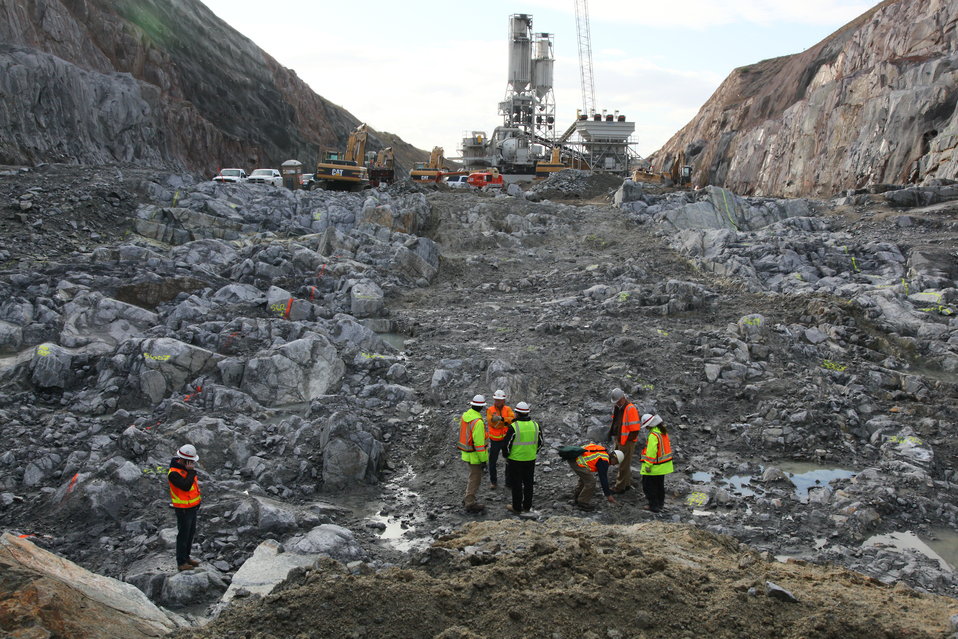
Evaluating the Folsom Dam auxiliary spillway foundation

A team of geologists from the U.S. Army Corps of Engineers Sacramento District meets with a consultant review board at the excavation site for the Folsom Dam auxiliary spillway in Folsom, Calif., Feb. 29, 2012. The board, made up of highly-qualified geology, geotechnical and structural experts, was hired to evaluate the integrity of the spillway’s foundation - a requirement for Corps’ civil works construction projects intended to reduce risk to lives to ensure they meet the highest safety standards. The spillway will allow Folsom Dam to release water sooner and more safely. The project is part of the Folsom Dam Joint Federal Project, a joint effort of the U.S. Army Corps of Engineers Sacramento District, the U.S. Bureau of Reclamation, the Central Valley Flood Protection Board and the Sacramento Area Flood Control Agency to improve the safety of the dam and reduce flood risk for the greater Sacramento area.